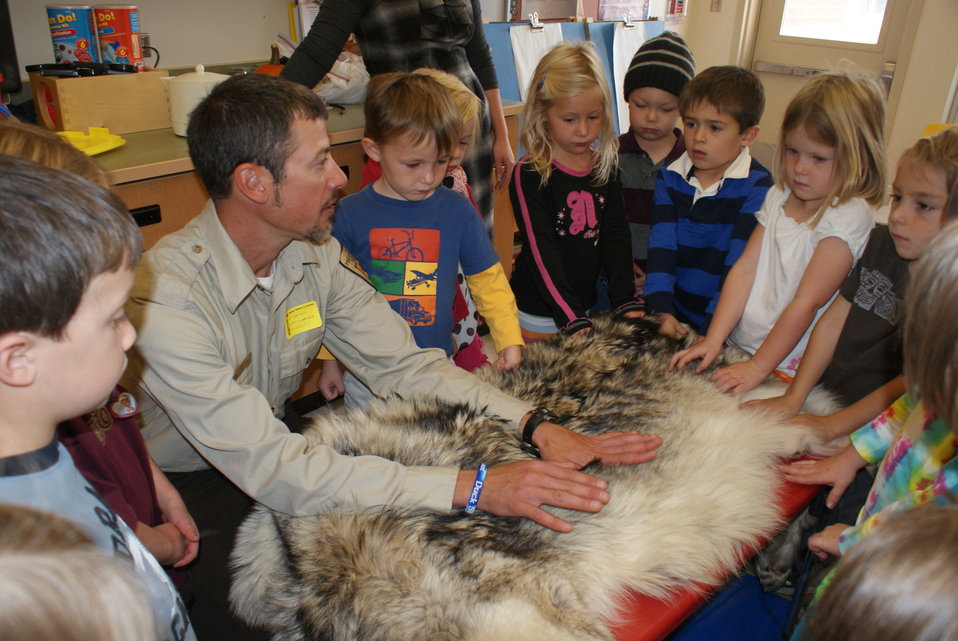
Scientists in the Community Program

U.S. Fish and Wildlife Service Mountain-Prairie Region Deputy ARD for External Affairs, Matt Kales, introduces early childhood education students at William Roberts Elementary School in Denver to some of Colorado's native and historic wildlife species.